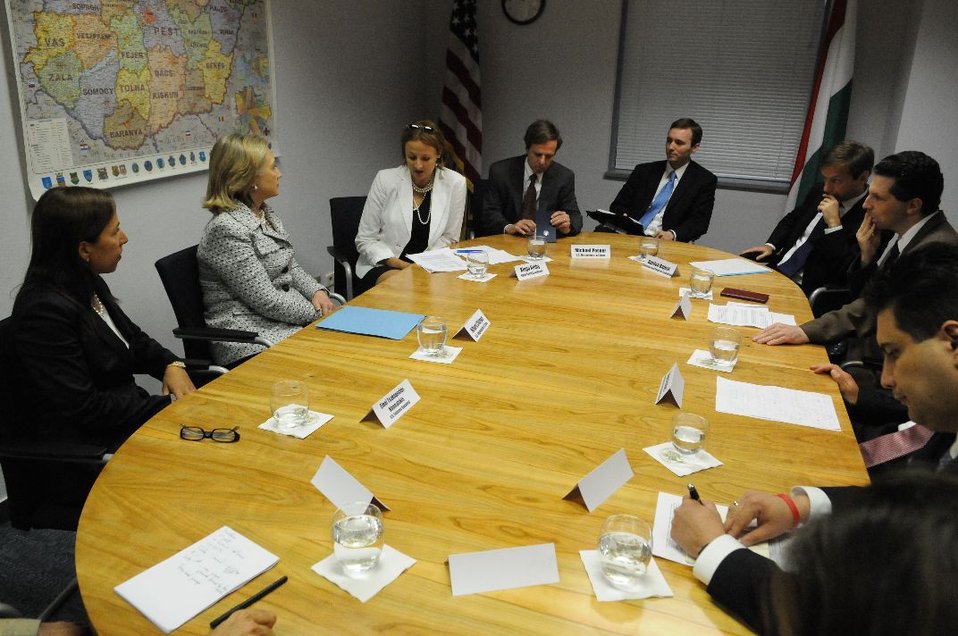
Secretary Clinton Meets With Hungarian Opposition Politicians and Civil Society Leaders

U.S. Secretary of State Hillary Rodham Clinton meets with Hungarian opposition politicians and civil society leaders in Budapest, Hungary, June 30, 2011. From left to right are: U.S. Ambassador to Hungary Kounalakis, Secretary Clinton, Kinga Réthy of the Open Society Institute, Assistant Secretary of State for Democracy, Human Rights, and Labor Michael Posner, Chief Advisor to Secretary Clinton Tomicah Tillemann, Gordon Bajnai of the Patriotism and Progress Foundation, LMP faction leader András Schiffer, and Socialist Party President Attila Mesterházy.